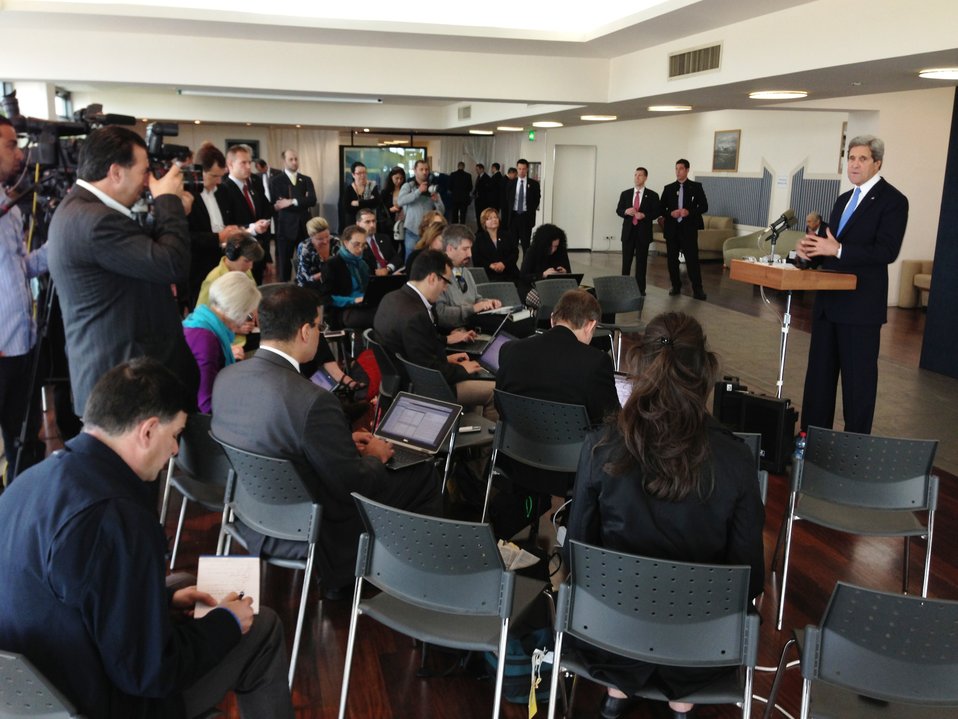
Secretary Kerry Addresses Reporters in Tel Aviv

U.S. Secretary of State John Kerry addresses U.S., Israeli, and Palestinian reporters in Tel Aviv, Israel, on April 9, 2013.